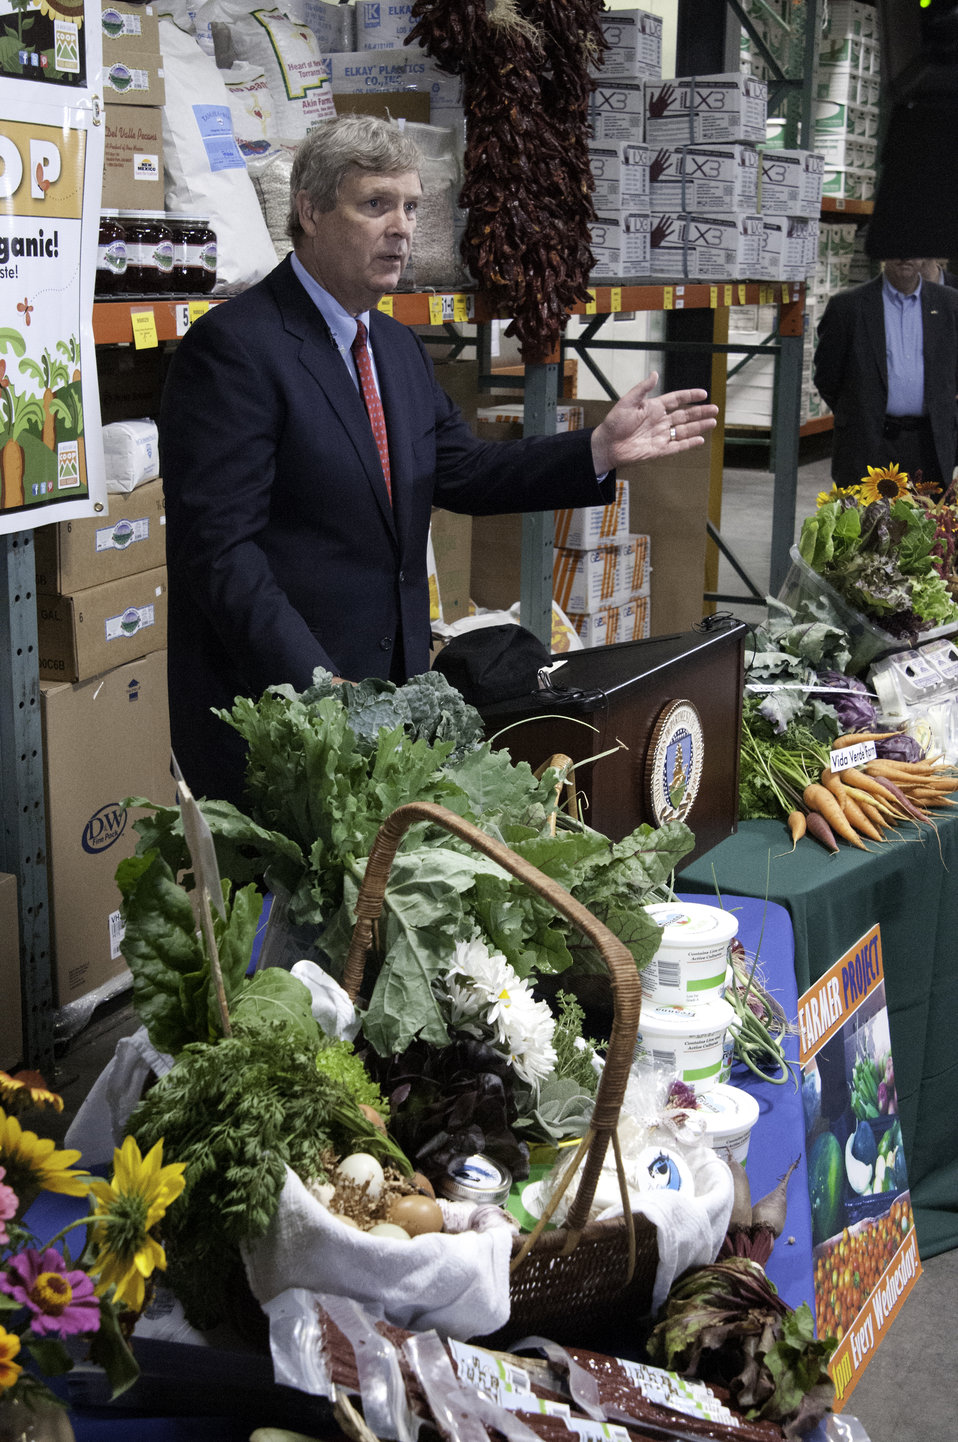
Agriculture Secretary Tom Vilsack meets with New Mexico producers and community stakeholders to highlight the U.S. Department of Agriculture’s (USDA) StrikeForce Initiative opportunities and the importance of comprehensive immigration reform in Albuquerque, NM on Thursday, Jun. 20, 2013.